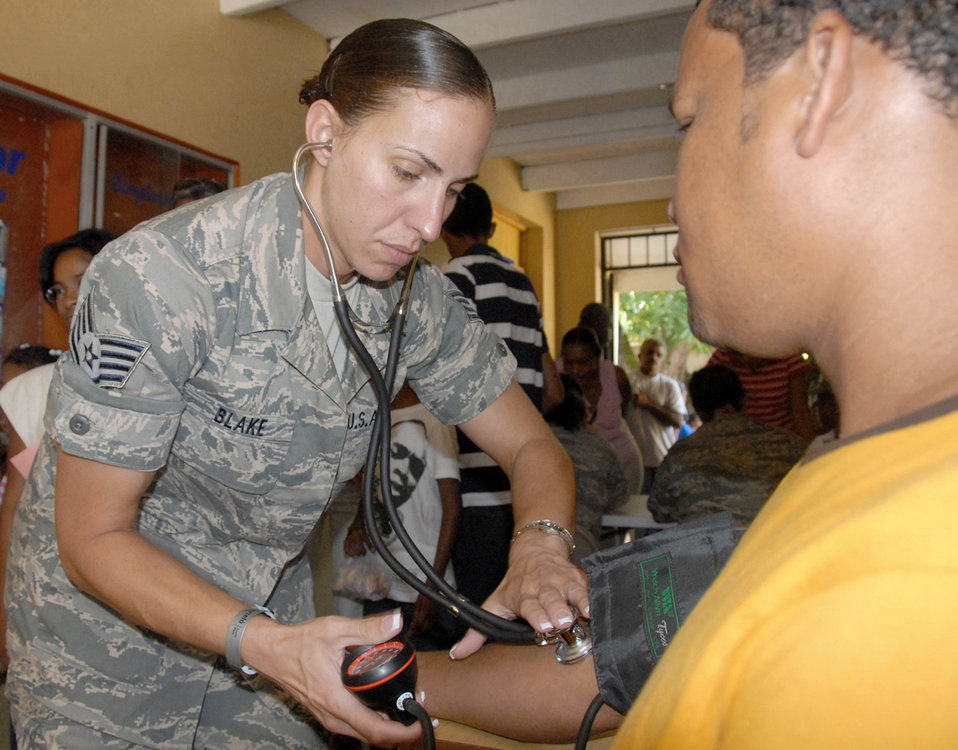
Team provides medical care in Dominican Republic

Staff Sgt. Laurie Blake checks a Dominican patient's blood pressure during a medical readiness exercise May 24, 2010, in the Dominican Republic. A team of 39 medical specialists from Air Force Reserve Command is providing medical care to four towns in the Puerto Plata region of the country. Sergeant Blake is a medical technician with the 927th Aeromedical Staging Squadron, MacDill Air Force Base, Fla.